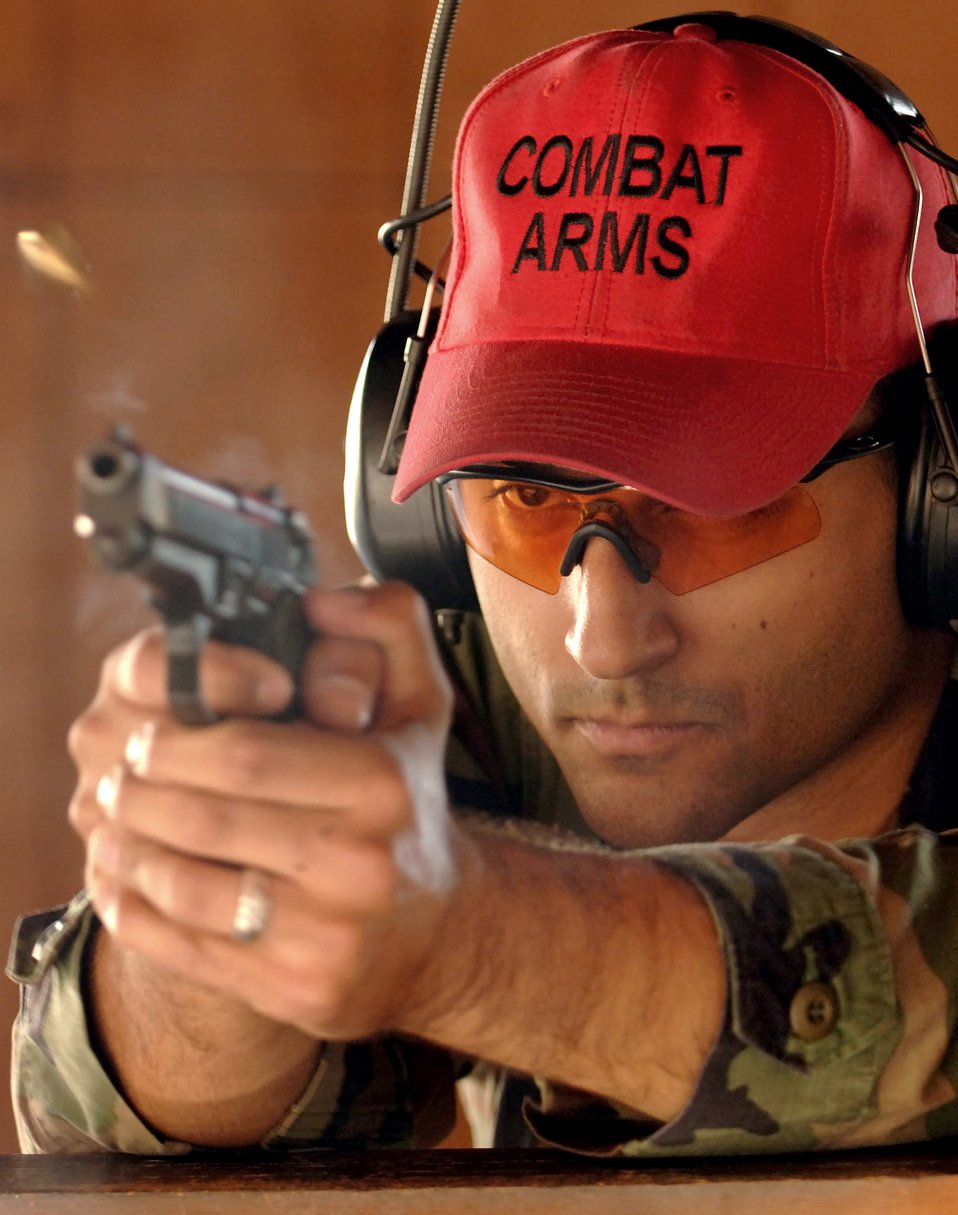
Combat arms training

Staff Sgt. Christopher Oshana fires a Beretta M-9 pistol for proficiency training at the MacDill Air Force Base, Fla., small arms range Monday, March 27, 2006. Combat arms training and maintenance, or CATM, instructors are required to fire 500 rounds a year on each small arms weapon they teach in order to stay proficient. Sergeant Oshana is a CATM instructor with the 6th Security Forces Squadron.